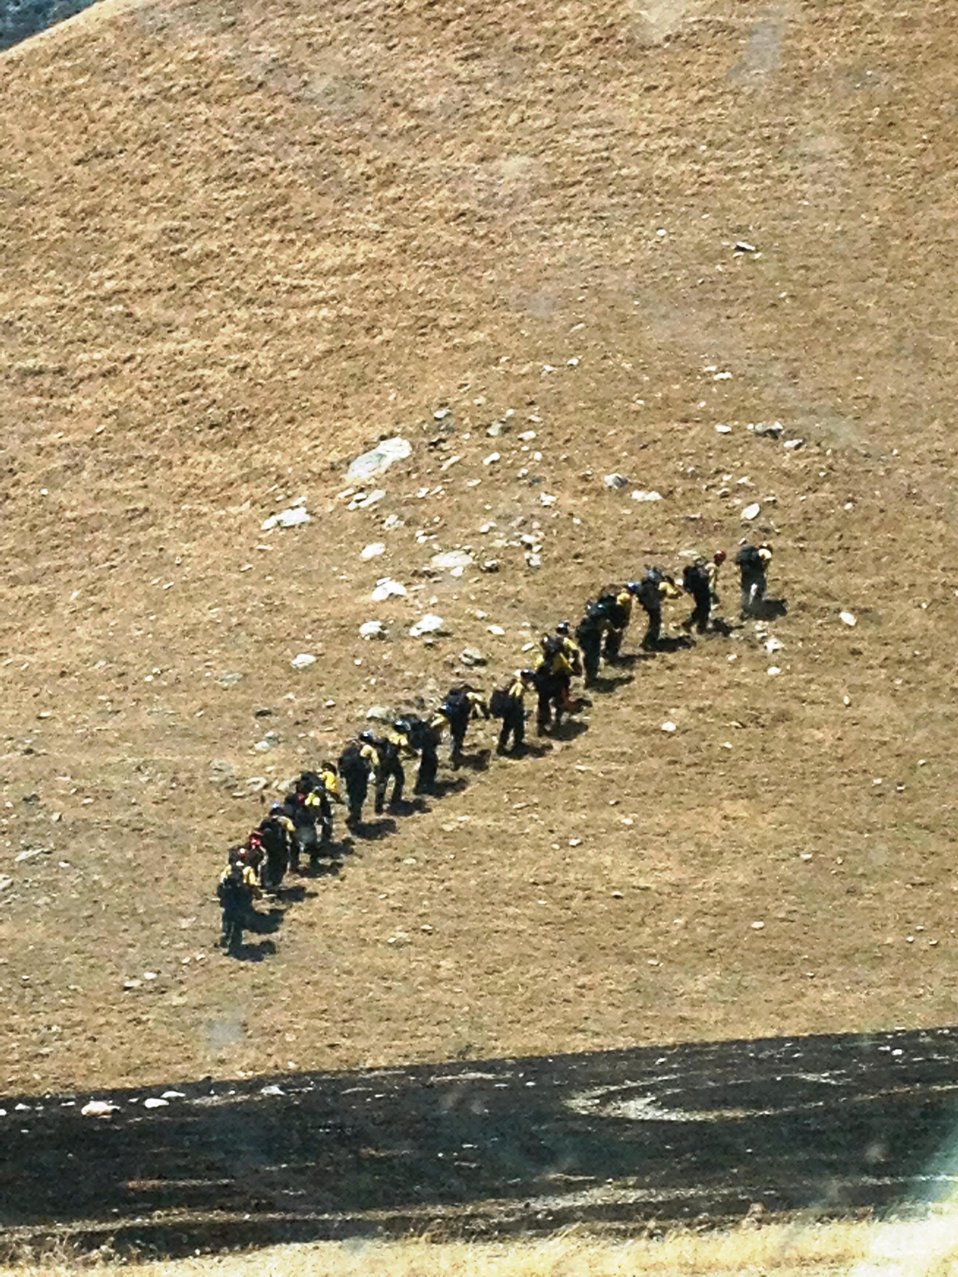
A fire crew works the fire line at the Hathaway Fire. The Hathaway Fire is east of Hathaway Canyon on the northern portion of the Morongo Indian Reservation in the San Gorgonio Wilderness near Palm Springs, CA began on started Jun. 9, 2013 and the cause is still to be determined. The fire has burned approximately 3, 825 acres and is 95% contained as of Jun. 25, 2013.